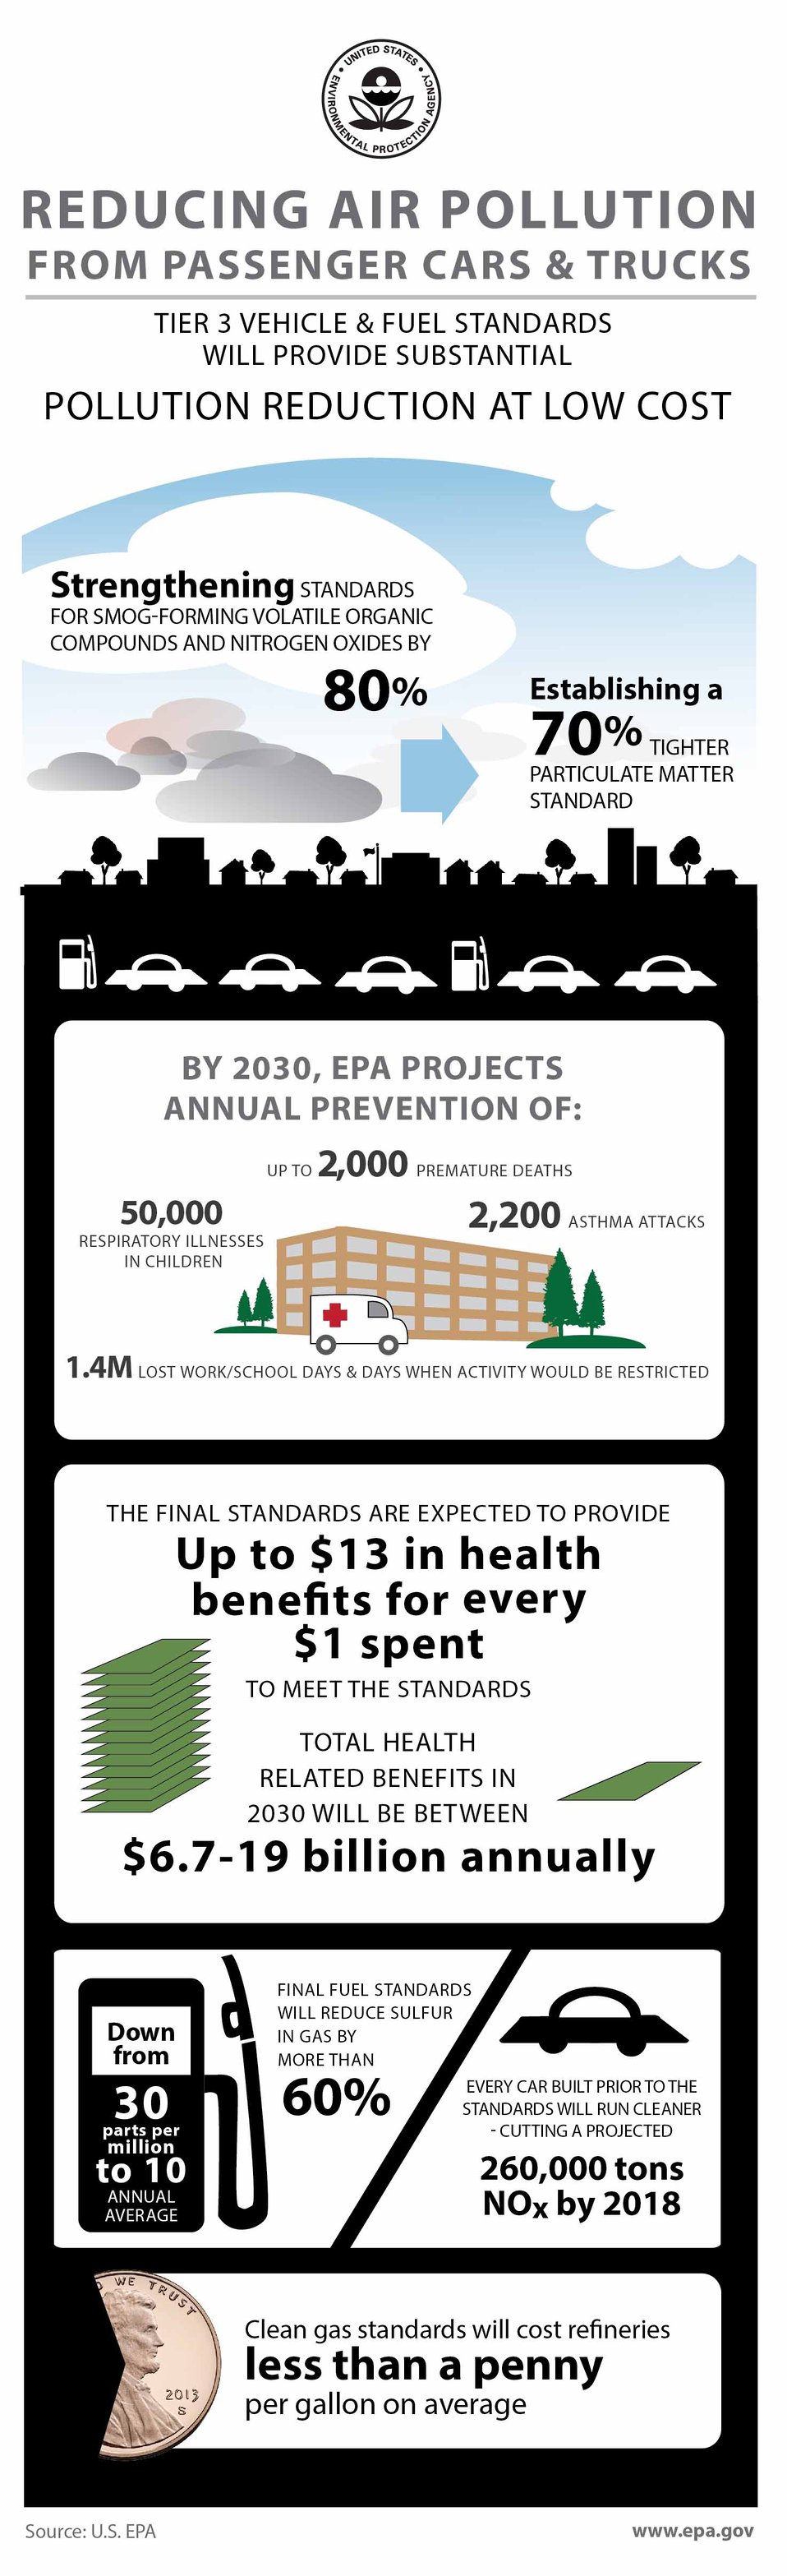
Reducing Pollution from Passenger Cars and Trucks

Today’s new vehicle and fuel standards mean cleaner air, healthier American families: www.epa.gov/otaq/tier3.htm